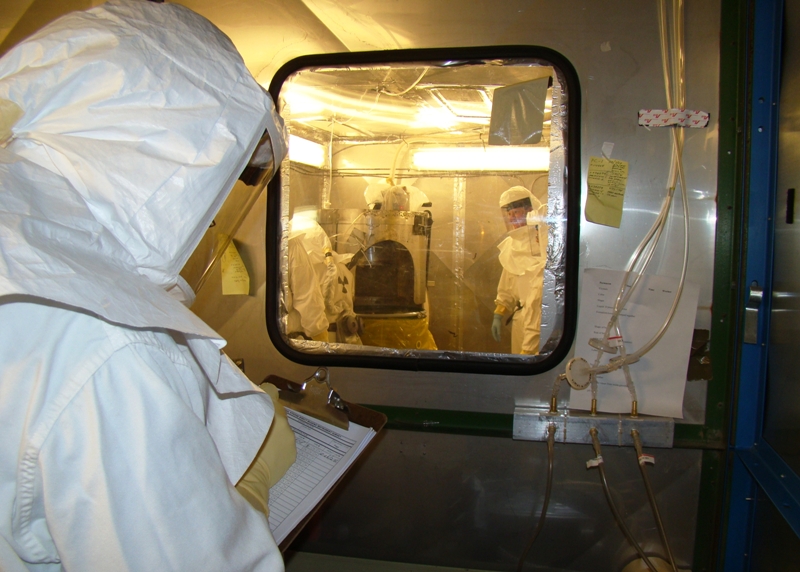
Stimulus jobs build skill sets, confidence

A nuclear chemical operator is observed in training for repackaging waste.